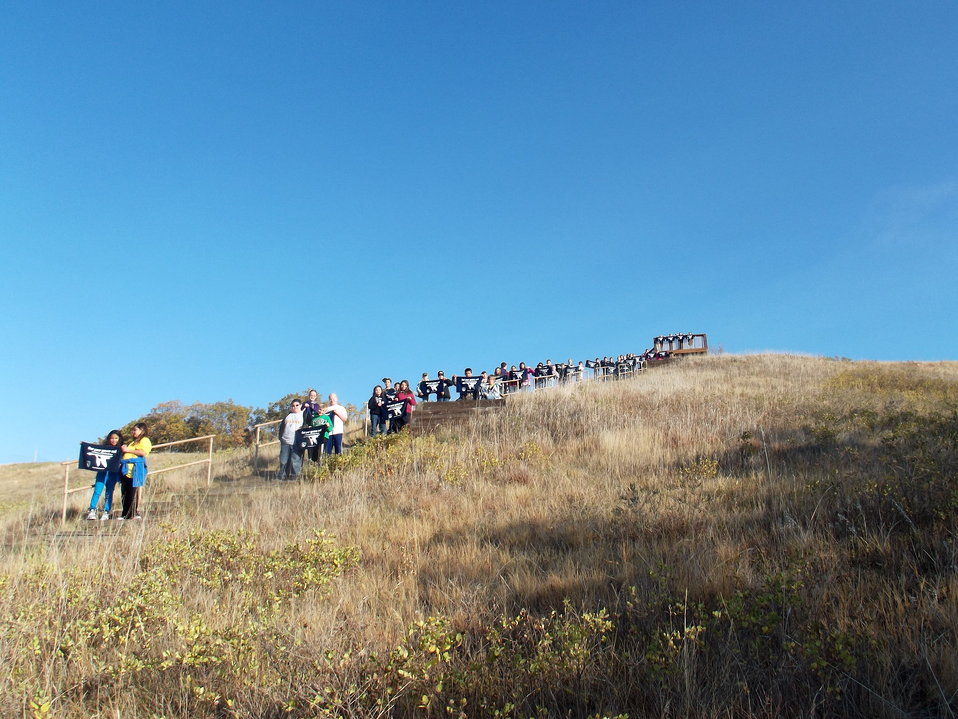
Get Your Goose On!

Photo taken at Sullys Hill National Game Preserve.